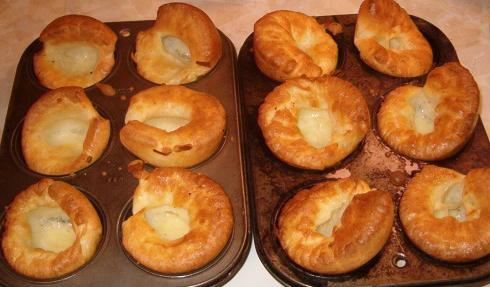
Author is user Canadianmusic. I wish to have this go to the Yorkshire Pudding entry with specific metion of the *tin* aspect of the bakeware. The puddings on the left are smaller as they used 2 tbs batter per pudding, graduating to 5 tbs in the ones on the right. Other pics, with puddings being cooked in cast-iron and glass bakeware to follow, contrasting the variations in finished product. Thx